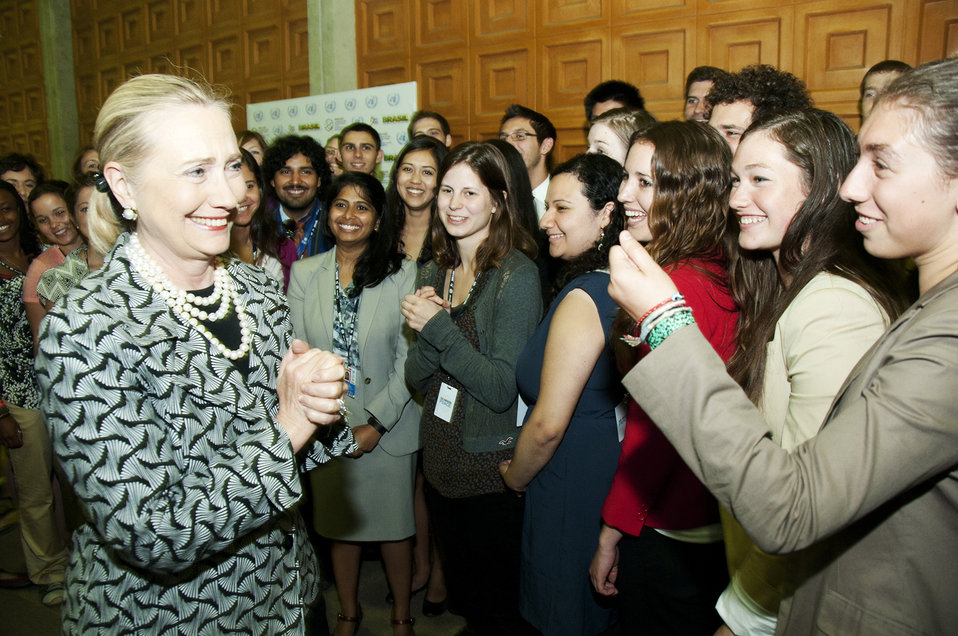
Secretary Clinton Greets SustainUS Youth Members

U.S. Secretary of State Hillary Rodham Clinton greets SustainUS youth members in Rio de Janeiro, Brazil during the Rio 20 Conference on June 22, 2012.